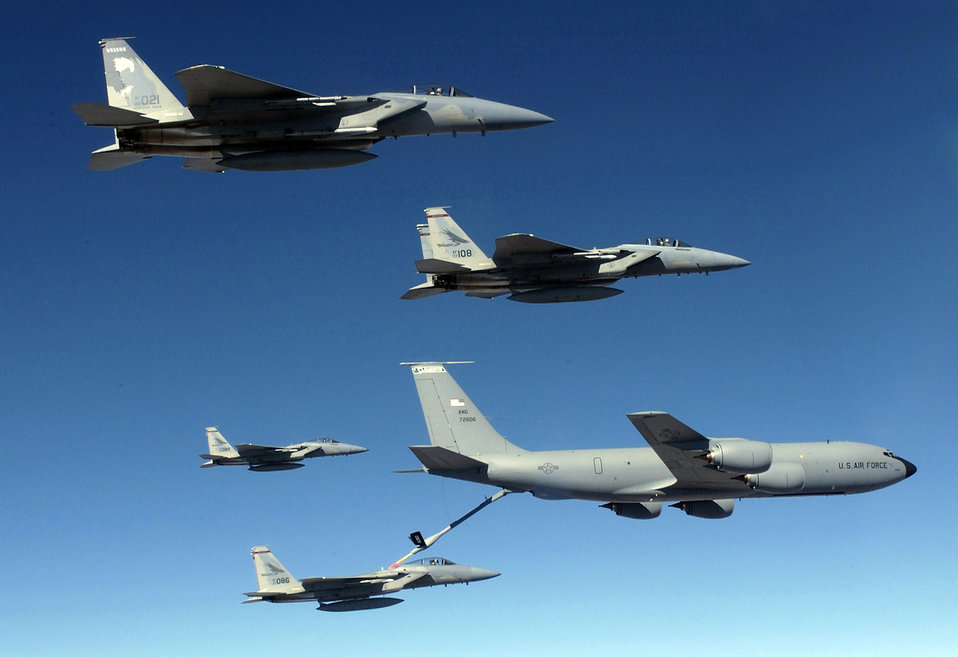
Oct. 14 airpower summary: KC-135s sustain flight in AOR

A KC-135 Stratotanker aircrew refuels four F-15 Eagles over Afghanistan. In 2008, Air Force tankers passed more than 1 billion gallons of gas to coalition aircraft.